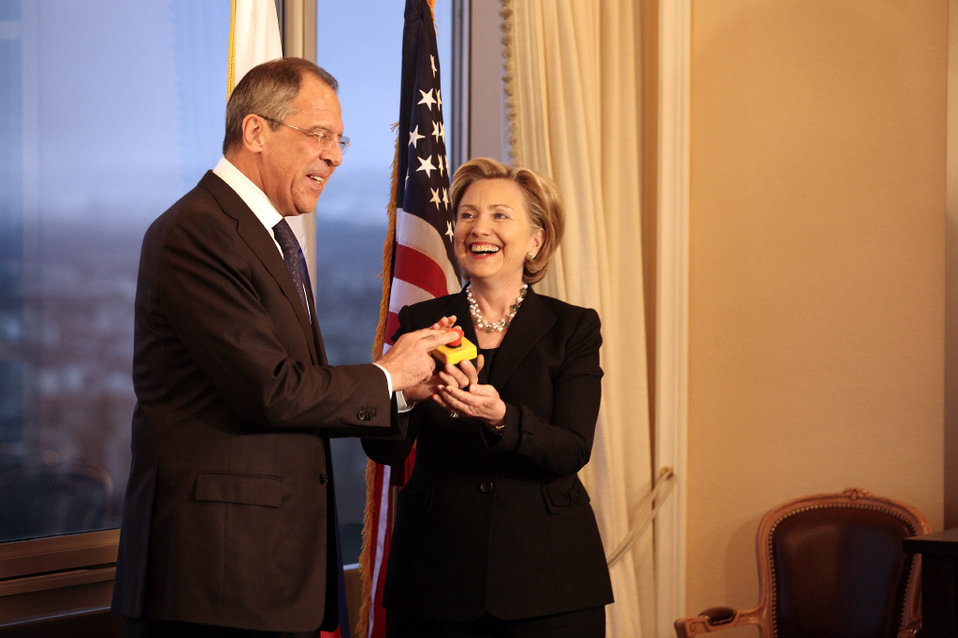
'Restart Button' offered by U.S. Secretary of State Hillary Rodham Clinton to Russian Foreign Minister Sergey Lavrov in Geneva, Switzerland March 6, 2009.